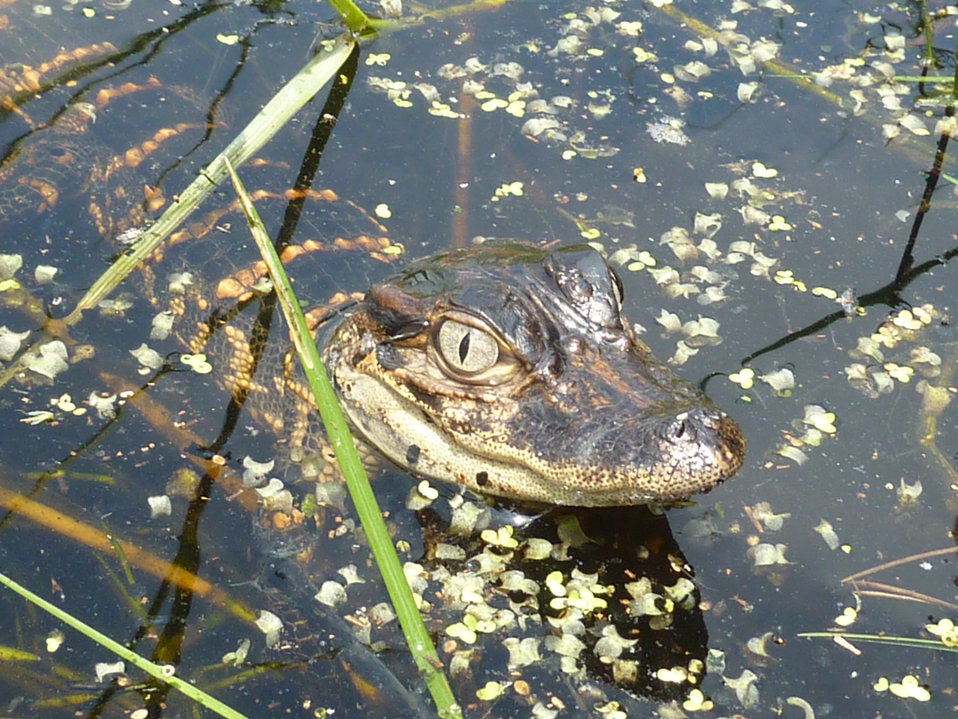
Closeup of American alligator baby

A baby alligator posed for a close-up photo.